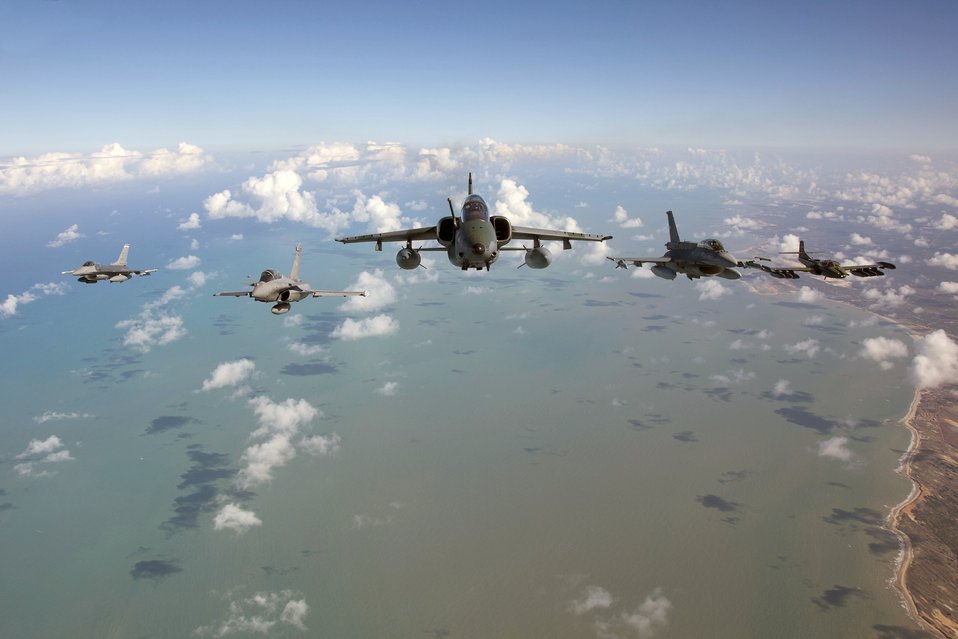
Southern Cross

Aircraft participate in the Southern Cross exercise Nov. 11, 2010, at Natal Air Base, Brazil. CRUZEX is a multinational, combined exercise involving the air forces of Brazil, Chile, Uruguay, Argentina and France. This was the first time the U.S. Air Force was invited to participate.